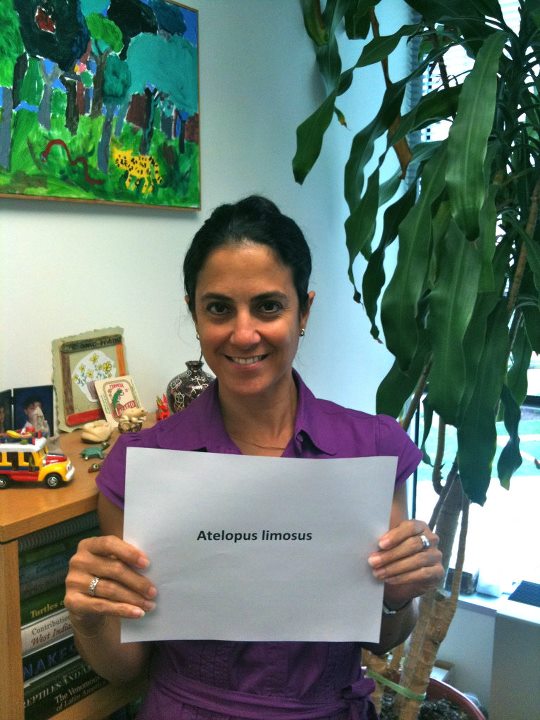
Amneris Siaca, 'Atelopus limosus,'

International Affairs participates in FFI's In Our Hands campaign